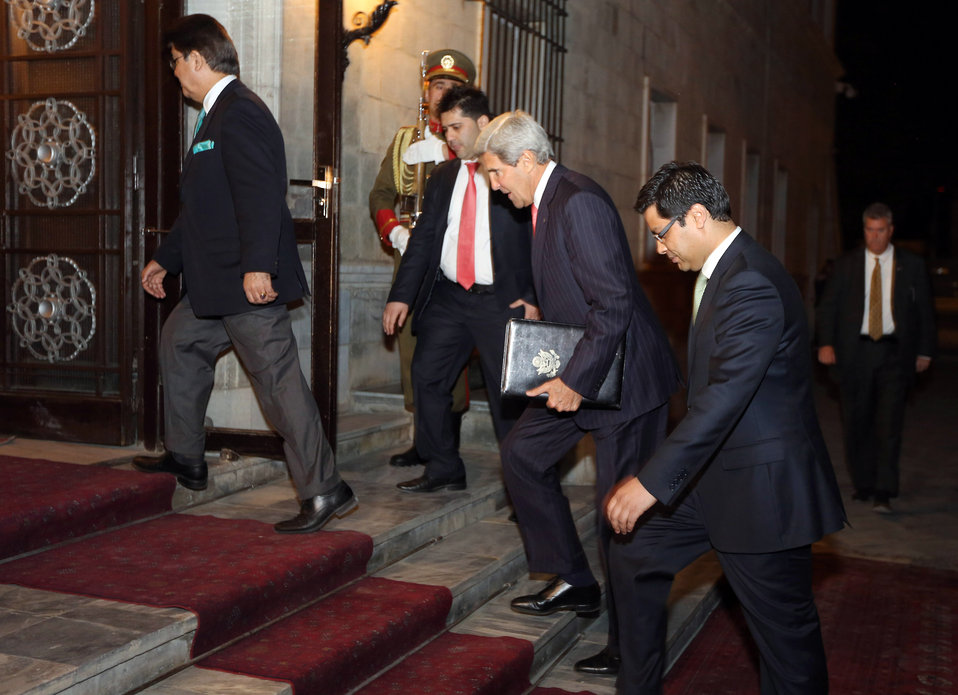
Secretary Kerry Enters the Afghan Presidential Palace

U.S. Secretary of State John Kerry enters the Presidential Palace to meet with Afghan President Hamid Karzai on October 11, 2013, in Kabul, Afghanistan.